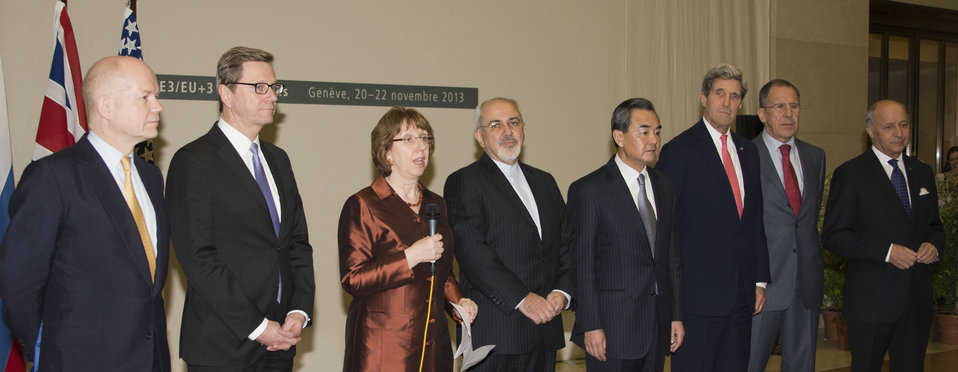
P5 1 Talks With Iran in Geneva, Switzerland

U.S. Secretary of State John Kerry and his fellow P5 1 foreign ministers, as well as Iranian Foreign Minister Javad Zarif, center, listen as European Union High Representative Catherine Ashton speaks at United Nations Headquarters in Geneva, Switzerland, after the group concluded negotiations about Iran's nuclear capabilities on November 24, 2013.